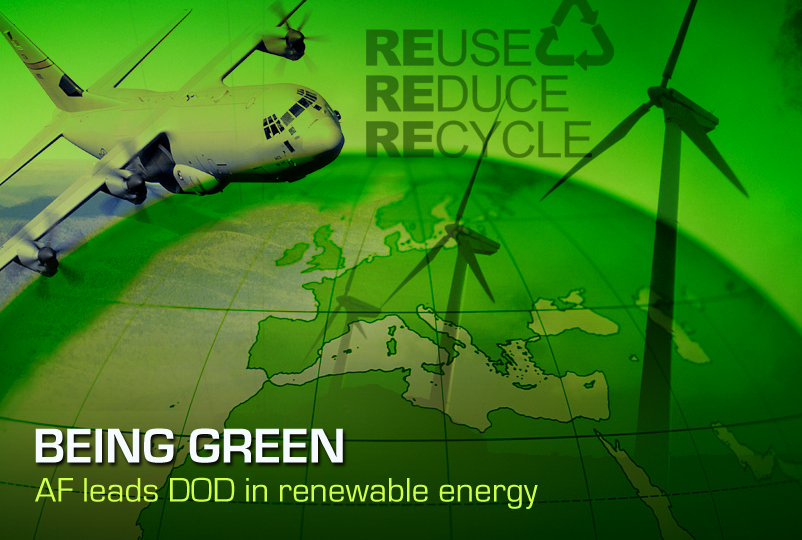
Being Green